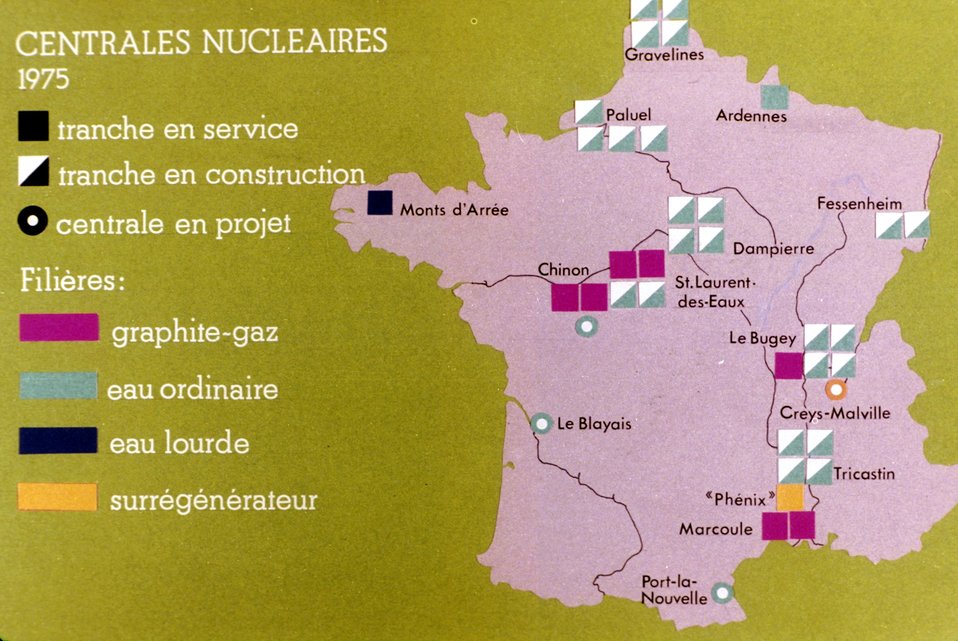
Carte de France des centrales nuclÐaires.